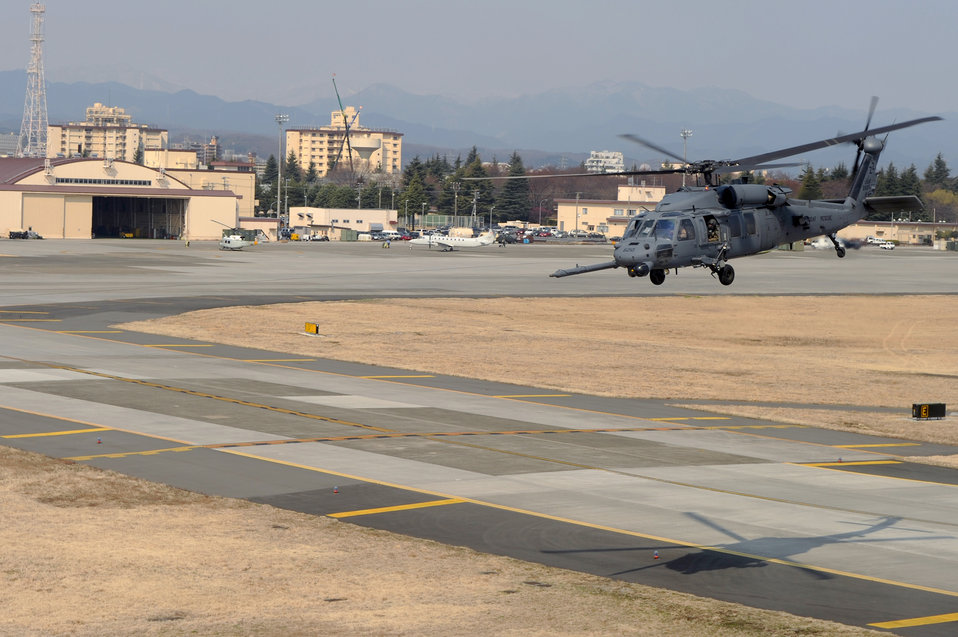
Rescue team mission

Rescue team members in an HH-60 Pave Hawk take off March 25, 2011, from Yokota Air Base, Japan, to conduct search operations in support of Operation Tomodachi.